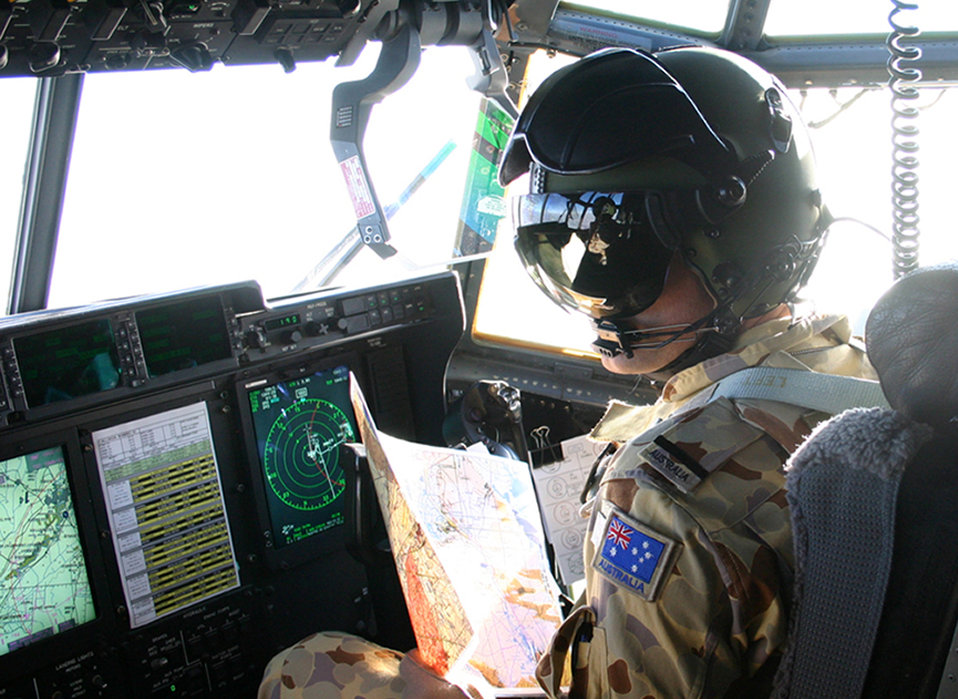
On a mission of mercy

ALI BASE, Iraq (AFPN) -- Flag Officer Damien Boswell is among the Royal Australian Air Force aircrew that fly weekly mercy missions throughout Iraq and Kuwait, gathering injured servicemembers and taking them to higher echelons of care. Officer Boswell is with the 37 Squadron based out of RAAF Base Richmond, New South Wales, Australia.